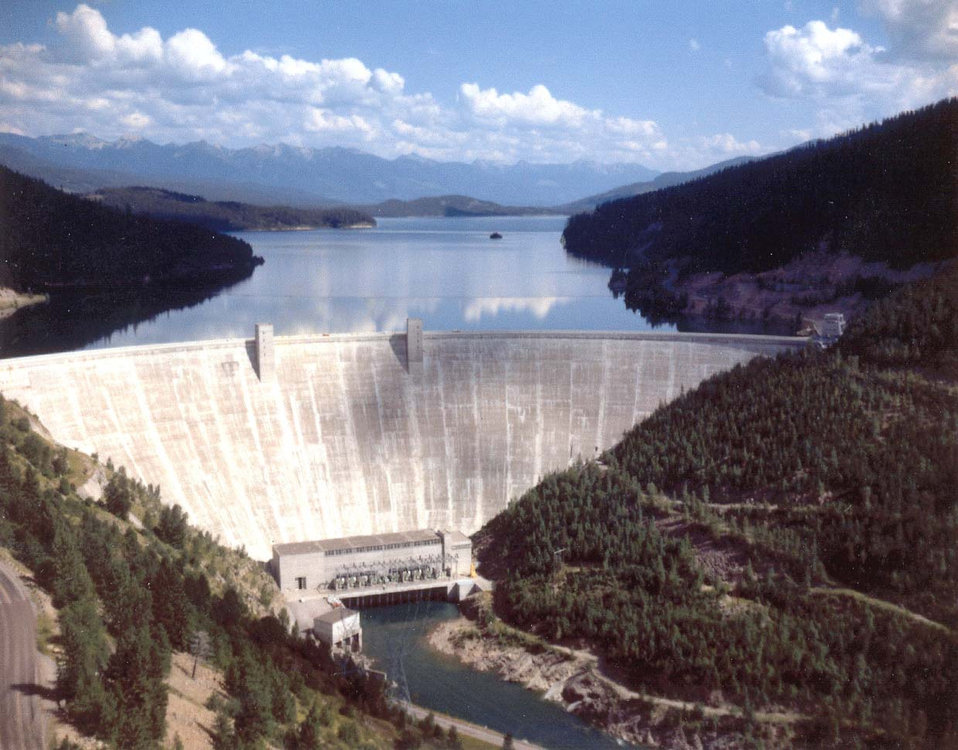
Hungry Horse Dam, on Montana's Flathead River, helped to pave the way for using fly ash in concrete. Completed in 1953, the dam was built with 120,000 metric tons of fly ash. It is one of the largest concrete-arch dams in the nation.